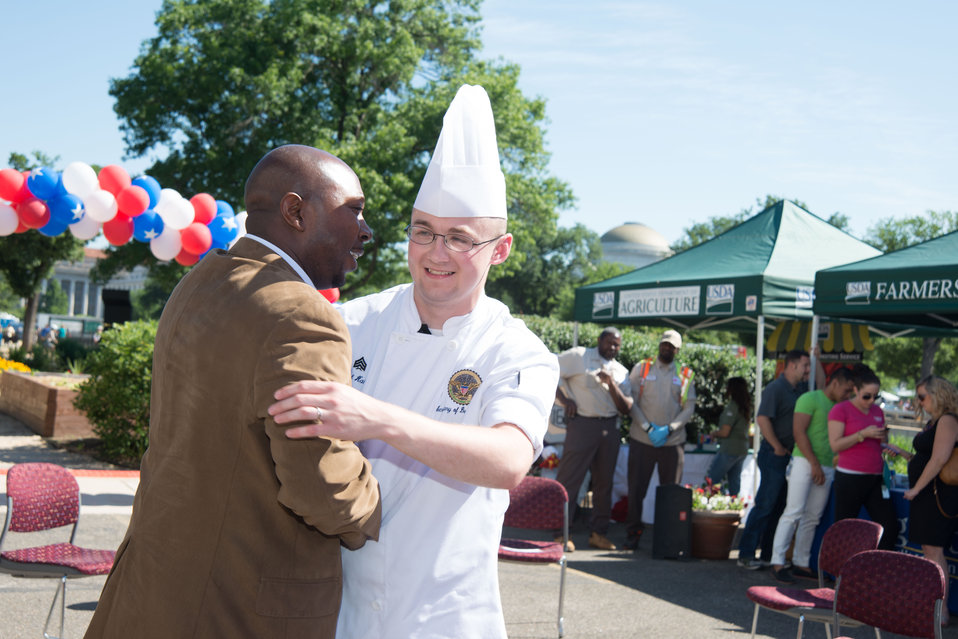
U.S. Marine Corps Sergeant (SGT) Joseph Hale receives challenge coin from U.S. Department of Agriculture (USDA) Farm and Foreign Agricultural Service (FAS) Deputy Under Secretary Karis T. Gutter at the opening USDA’s 2014 Farmers Market in the east parking lot of USDA in Washington, D.C. on Friday, Jun. 6, 2014.